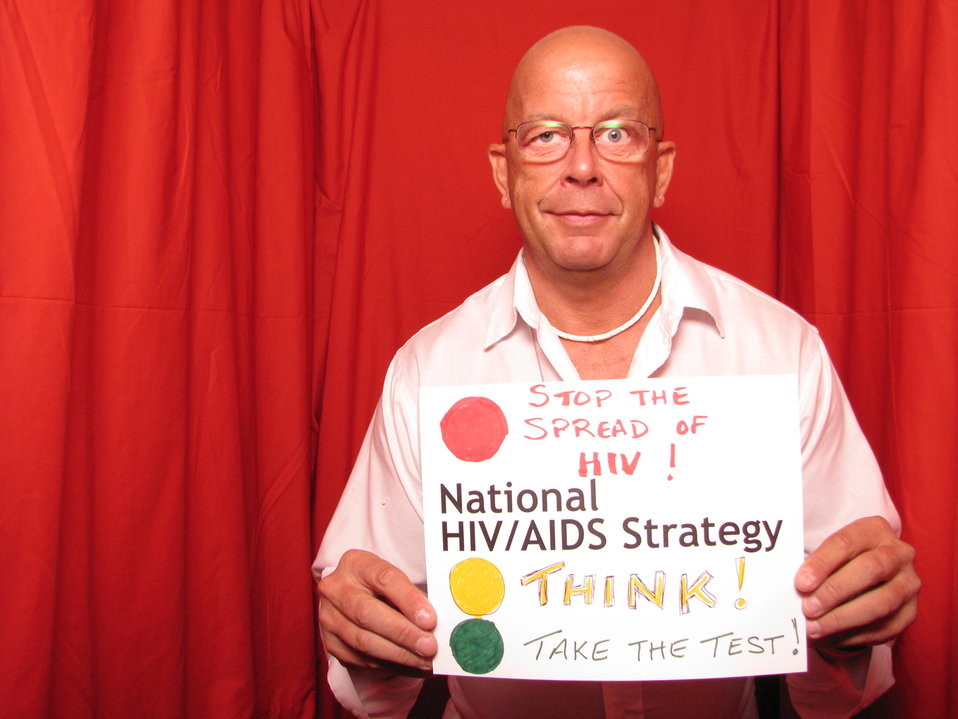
STOP the Spread of HIV! THINK! Take the Test! National HIV/AIDS Strategy.

From the AIDS.gov photo booth at the U.S. Conference on AIDS, September 2010 (Orlando, FL).